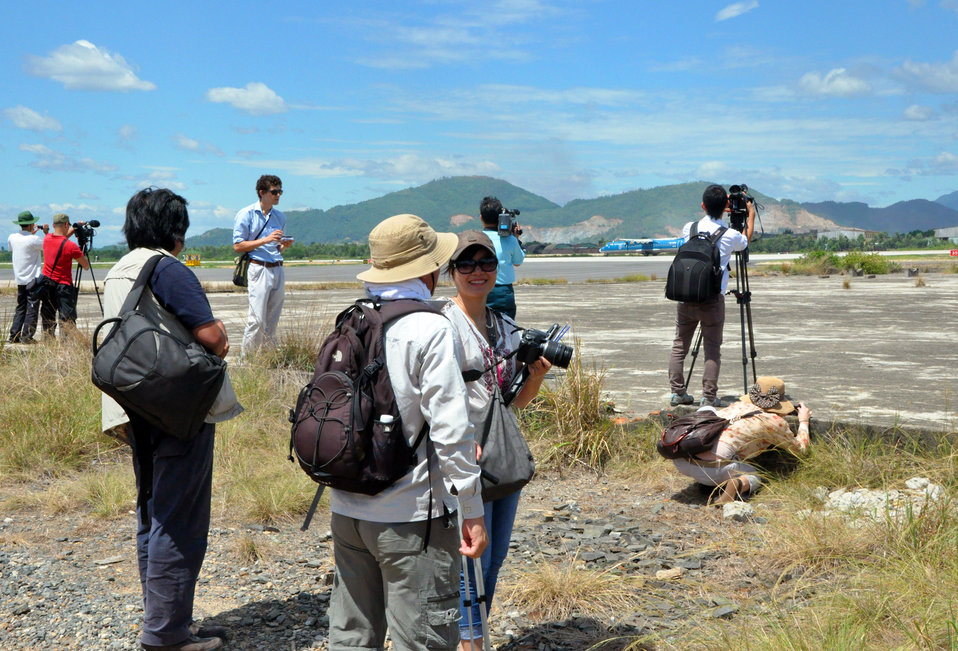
Photographers Visit Site of Environmental Remediation of Dioxin Contamination at Danang Airport Project Launch

Environmental Remediation of Dioxin Contamination at Danang Airport Project Launch